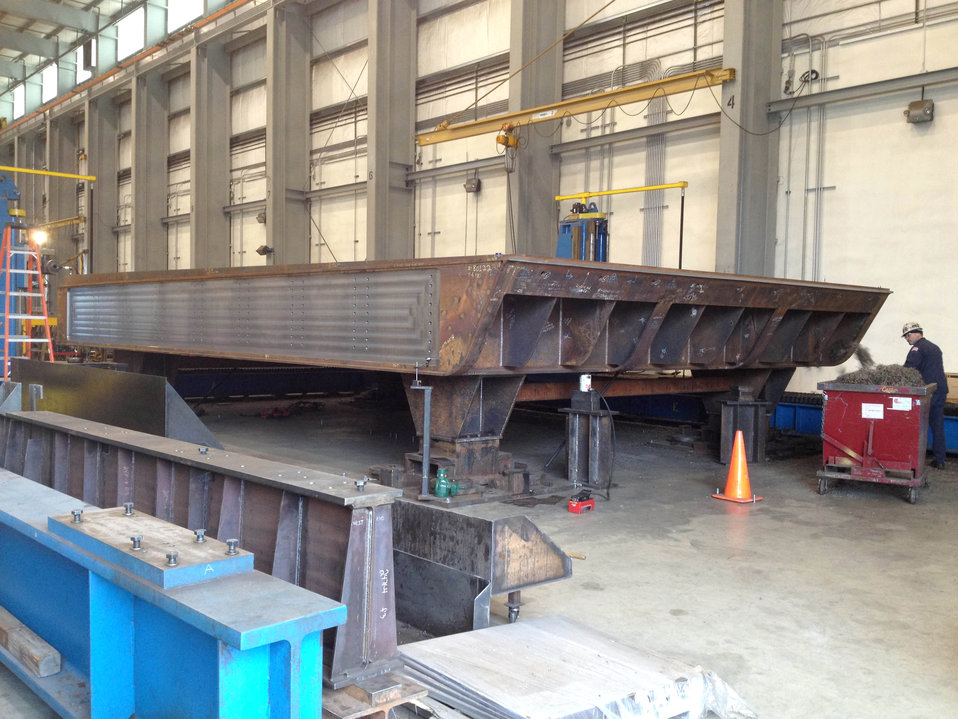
District staff checks progress on Folsom Dam auxiliary spillway gates

A bulkhead gate for the new Folsom Dam auxiliary spillway sits on a platform while a machine shaves off a layer of steel Nov. 28, 2012, at the Oregon Iron Works’ Vancouver, Wash., facility. Personnel from the U.S. Army Corps of Engineers Sacramento District, including commander Col. Bill Leady, took a tour of the site to gauge the progress on 12 massive bulkhead and tainter gates, which will control the flow of water from Folsom Lake through the spillway’s control structure. The spillway project is a joint effort of the U.S. Army Corps of Engineers, the U.S. Bureau of Reclamation, and state and local partners to reduce flood risk throughout the Sacramento region. The project is scheduled to be completed in 2017.